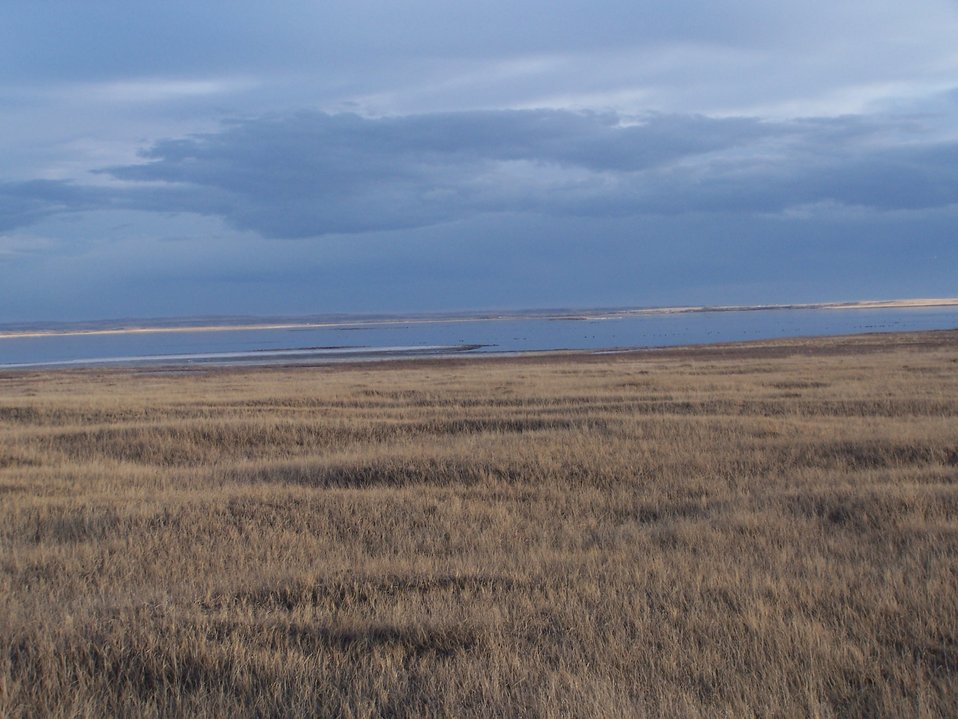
Lake Bowdoin in the background and native prairie in the foreground on Bowdoin NWR